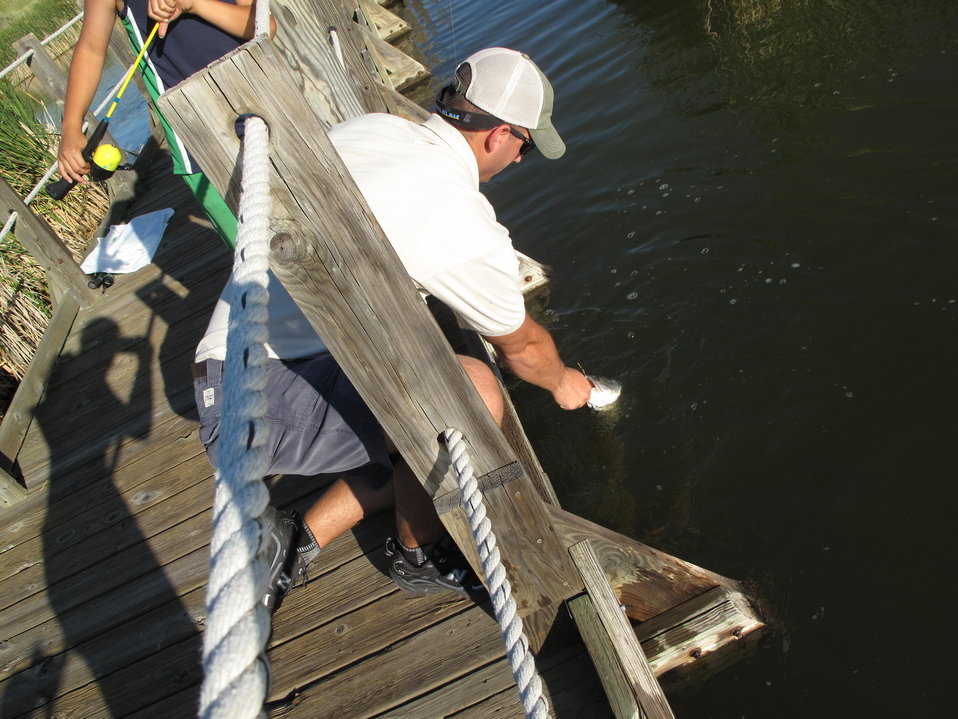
Fishing trip to the Rocky Mountain Arsenal

Matt Crouse, Environmental Learning for Kids (ELK) helping the kids get their fish out of the water.